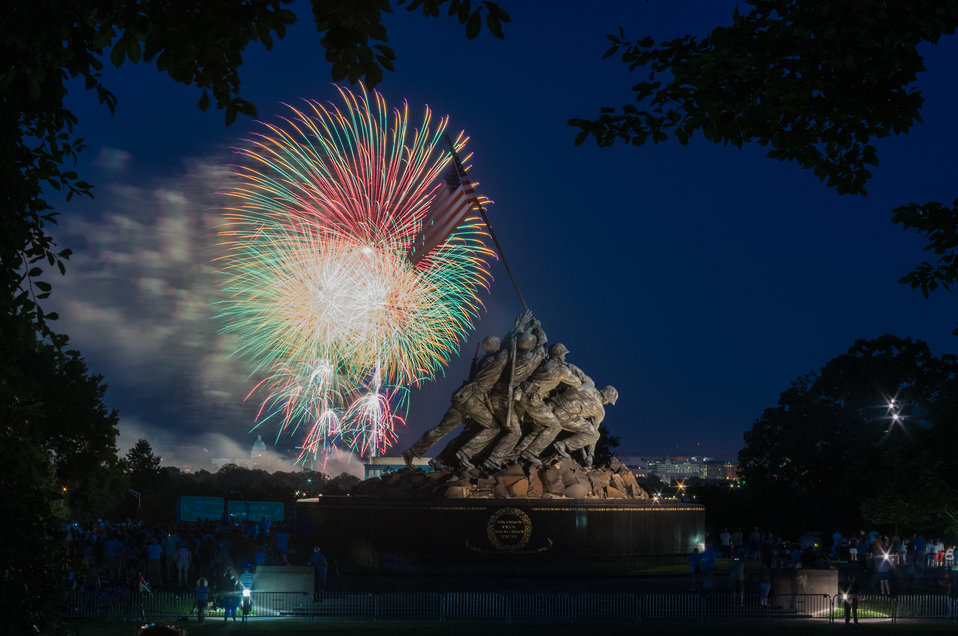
Independence Day celebration fireworks are seen from the Iwo Jima, U.S. Marine Corps Memorial in Arlington, VA on Jul. 4, 2013. In the distance are the Lincoln Memorial, the U.S. Department of Agriculture (USDA) Yates Building (dark red brick building), the Washington Monument (with scaffolding), and the U.S. Capitol building in Washington, D.C.